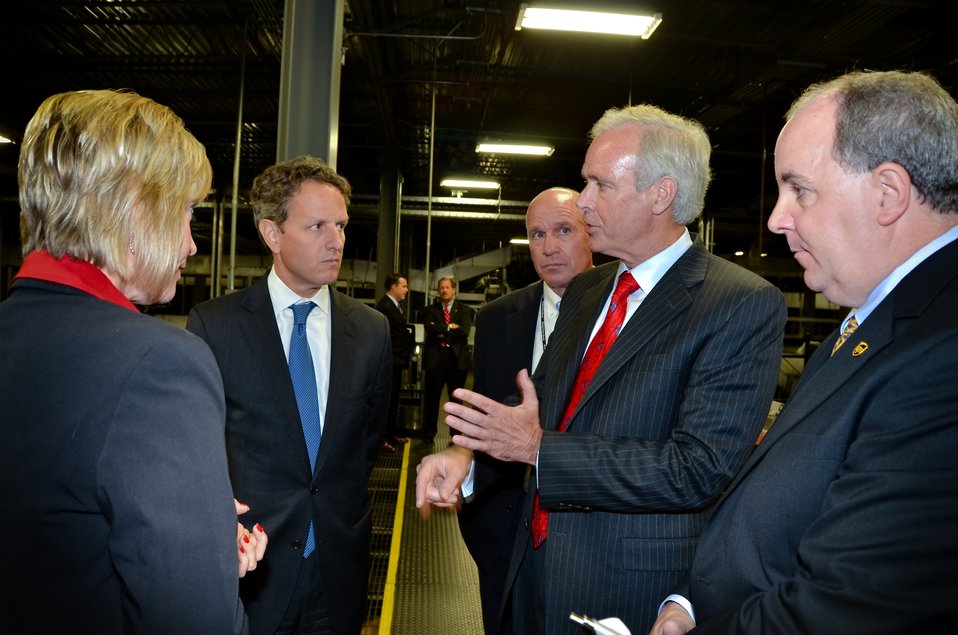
Secretary Geithner Visits UPS

Treasury Secretary Tim Geithner listens to UPS CEO Scott Davis guide a tour of the international air hub of UPS, a company that employs more than 330,000 workers in the U.S. and interfaces with almost every facet of America’s infrastructure.